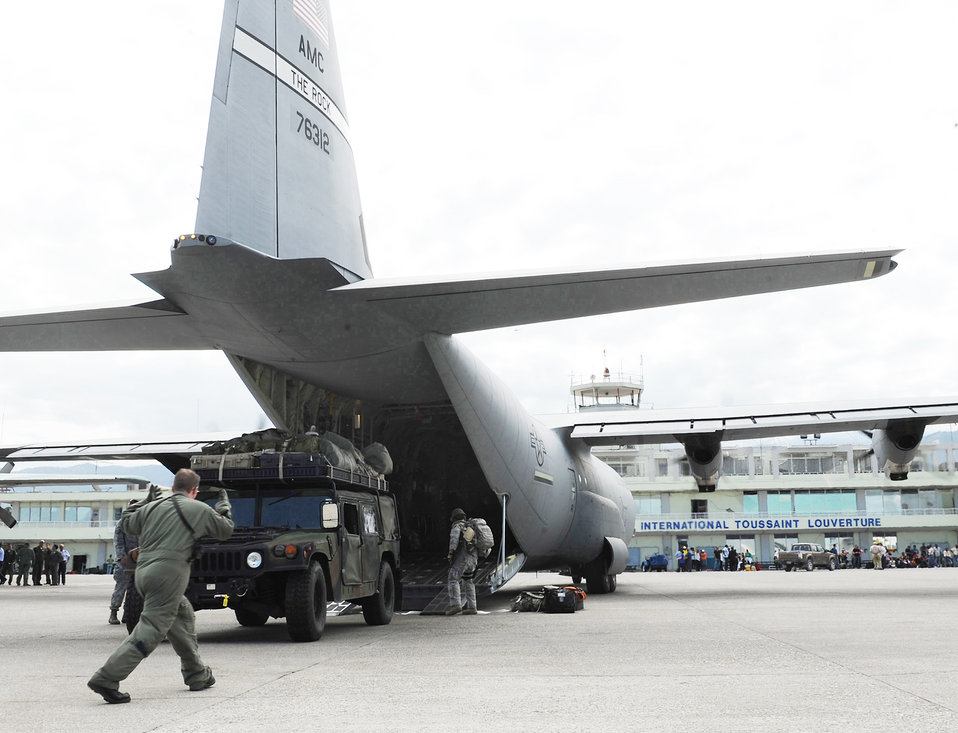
Little Rock AFB crew gets supplies on ground

Loadmasters from the 41st Airlift Squadron rapidly deploy a Humvee and equipment during an engine running off-load at the Toussaint L'Ouverture International Airport in Port-au-Prince, Haiti, Jan. 14, 2010 as part of on-going Haitian earthquake relief operations. The equipment and personnel departing delivered by the C-130J aircrew from Little Rock Air Force Base, Ark., will be used for conducting an airfield assessment